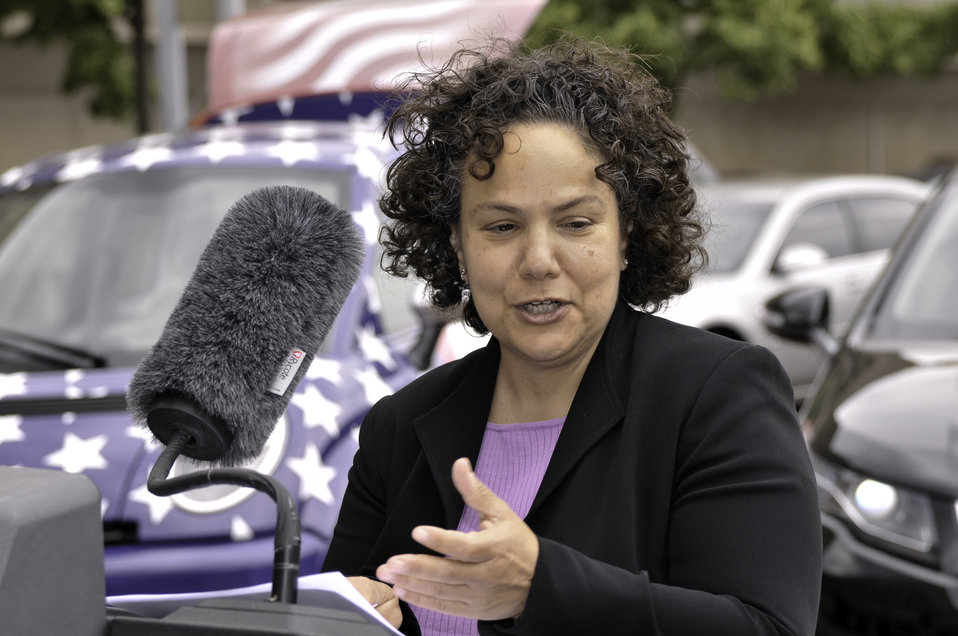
Clean Fleets Announcement 2 of 14

Nancy Sutley, White House Council on Environmental Council Chairwoman, speaks at a Clean Fleets event held at the Department of Energy.